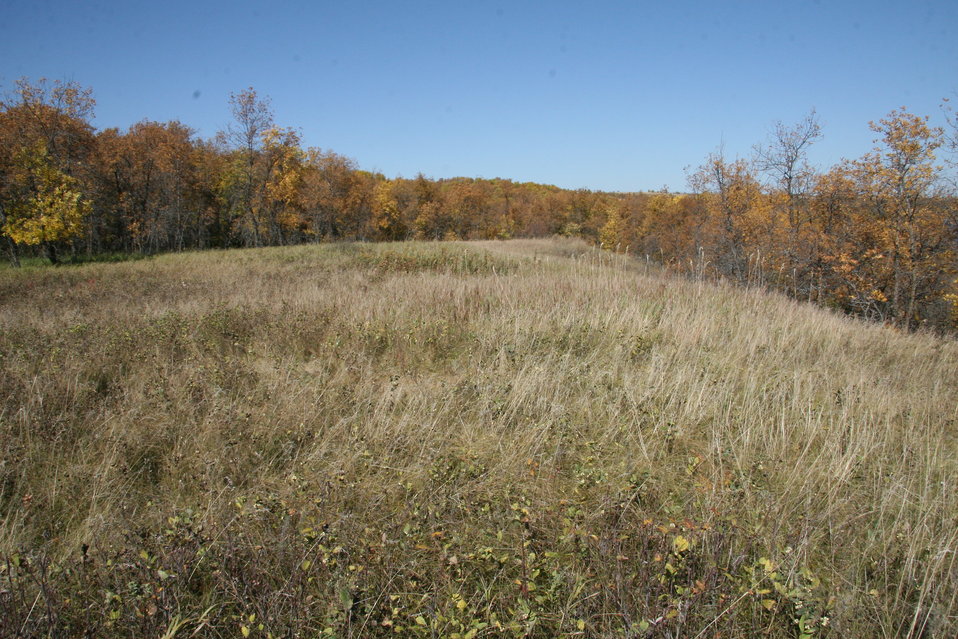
Fall Colors on Des Lacs Refuge